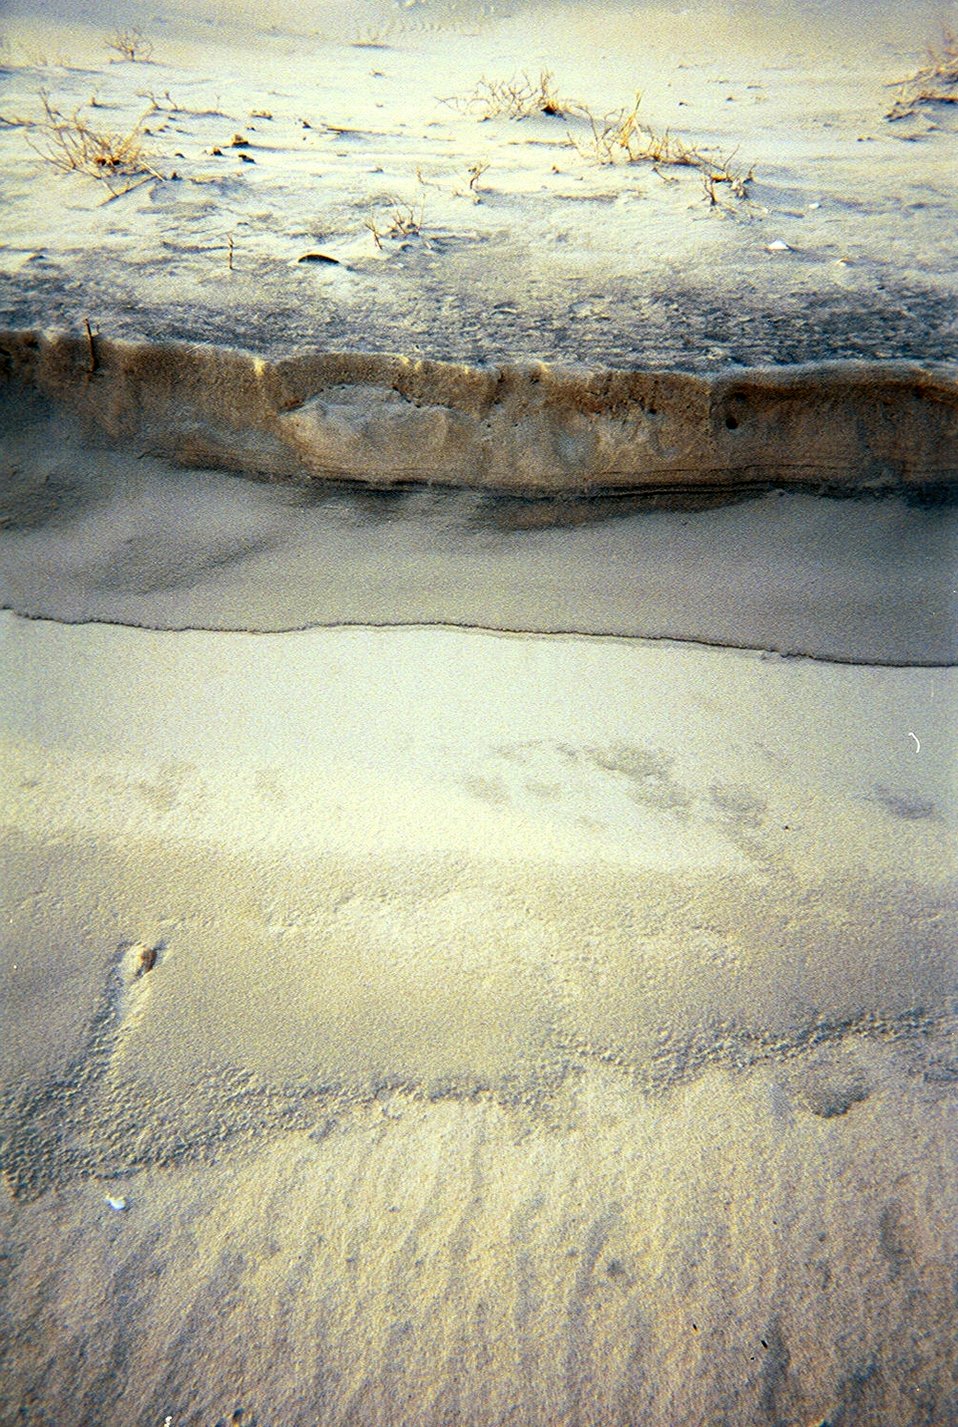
Eroding dune.